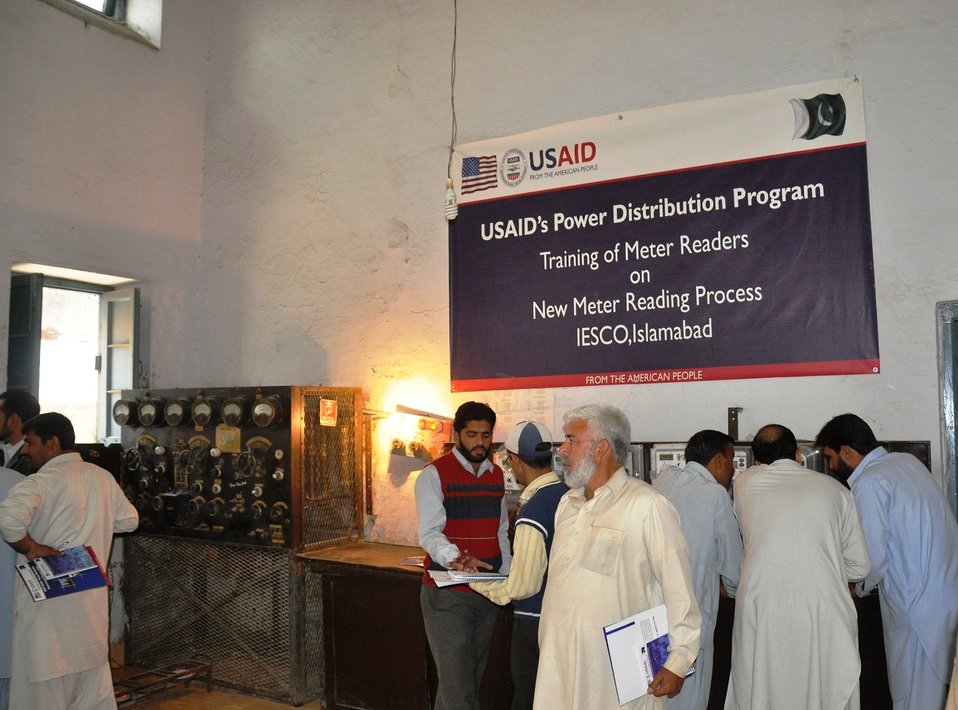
Training of meter readers at IESCO on new meter reading process

2-Days training of 55 meter reading staff on new meter reading process.
The objective was to familiarize meter readers with the display modes of meters from an array of different manufacturers (PEL,MICROTECH,SBEEC,CREATIVE Electronics, SB) so that only one meter reader has to walk a particular route each month, increasing efficiency of meter reading and minimizing duplication of efforts. A follow-up event was held on meter reading in November 2011.